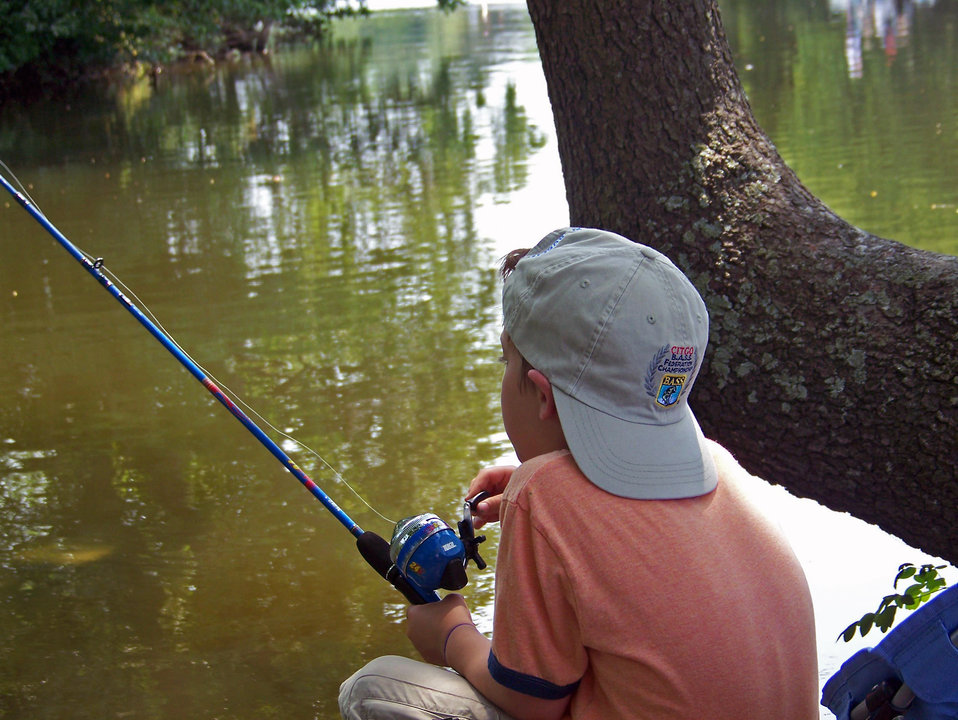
Youth fishing at an event at Prime Hook National Wildlife Refuge.